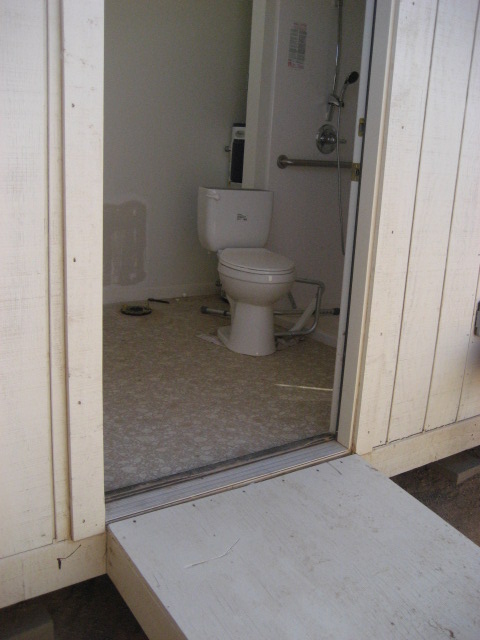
Modular Bathroom 3

The U.S. Department of Agriculture’s (USDA) Rural Development (RD) agency assisted in the construction of modular bathrooms that were added to homes on the Tohono O’odham Nation in southern Arizona on Nov. 1, 2012. Homes on the reservation were built years ago without indoor plumbing and the hope of adding sanitary facilities was stymied by the lack of access to treatment facilities. USDA RD has provided aid to Colonias in Arizona, California, New Mexico, and Texas. Colonias are neighborhoods or communities within 150 miles of the U.S./Mexico border that are economically distressed. Sanitation services like these promote public health and reduce the spread of illness and disease.